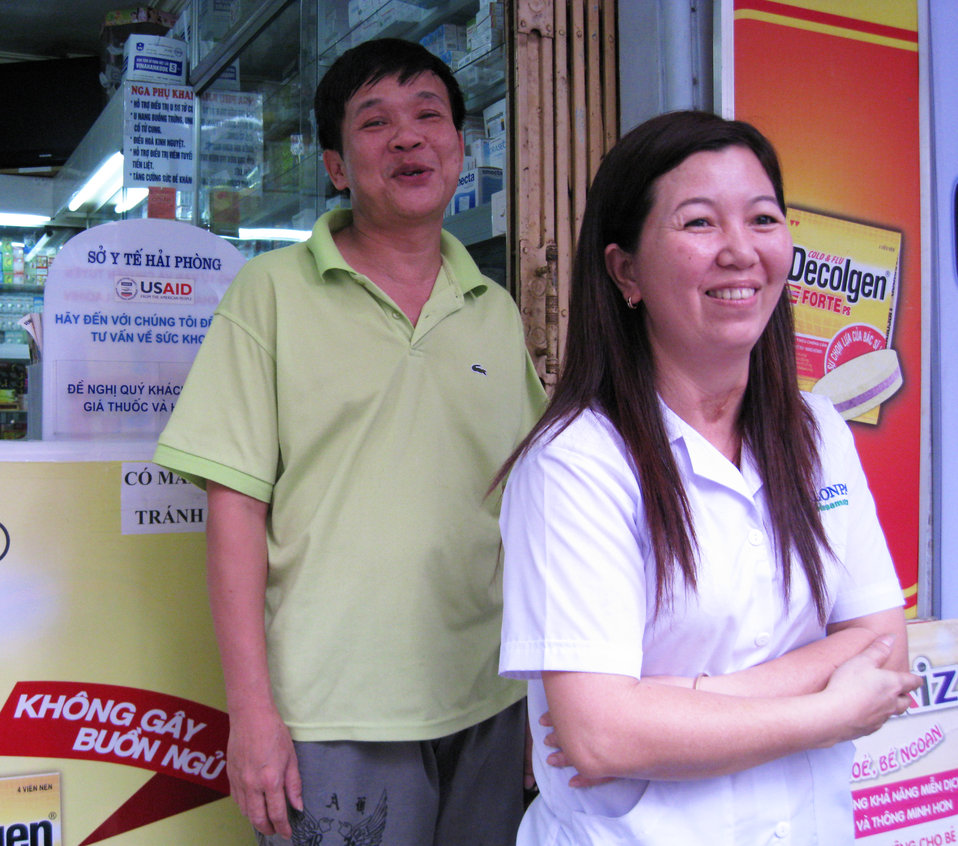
Pharmacies take part in TB referral services with the support of a USAID program